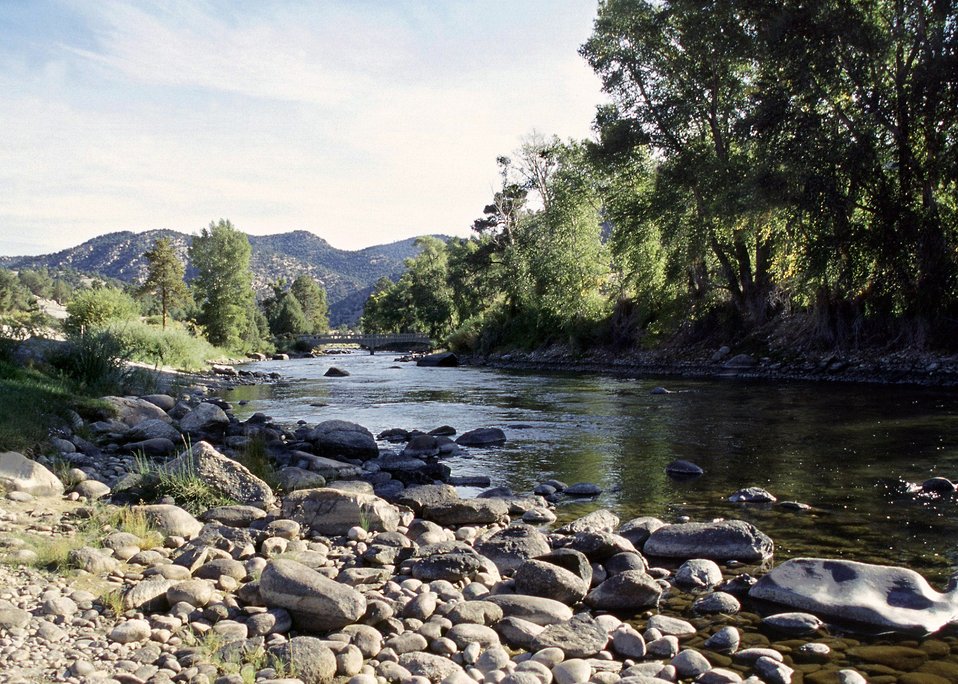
Arkansas River